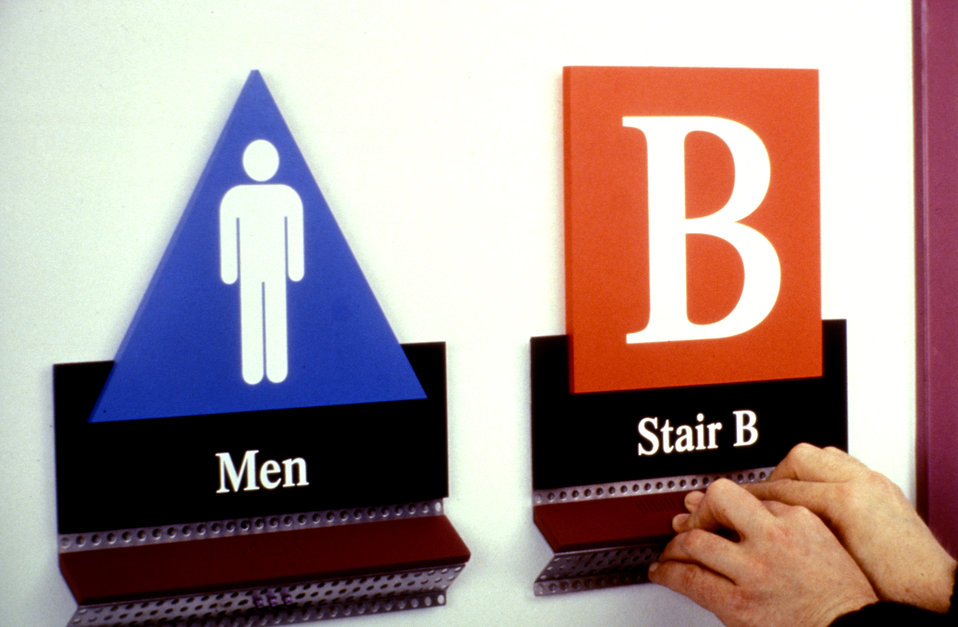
The visually-impaired person in this image was depicted interacting with a sign indicating the location of a stairwell labeled "B", which was adjacent to a men's restroom sign that used a large, blue, readily visible universal symbol describing 'man'. Included in the signage was an auditory output device, which improved the ability for each sign to impart its message to a much greater degree. This was one of a series of images provided by North Carolina State University's Center for Universal Design. 'The Center for Universal Design is a national research, information, and technical assistance center that evaluates, develops, and promotes universal design in housing, public and commercial facilities, and related products.' See PHIL# 9006 for another view depicting a womans's restroom sign.